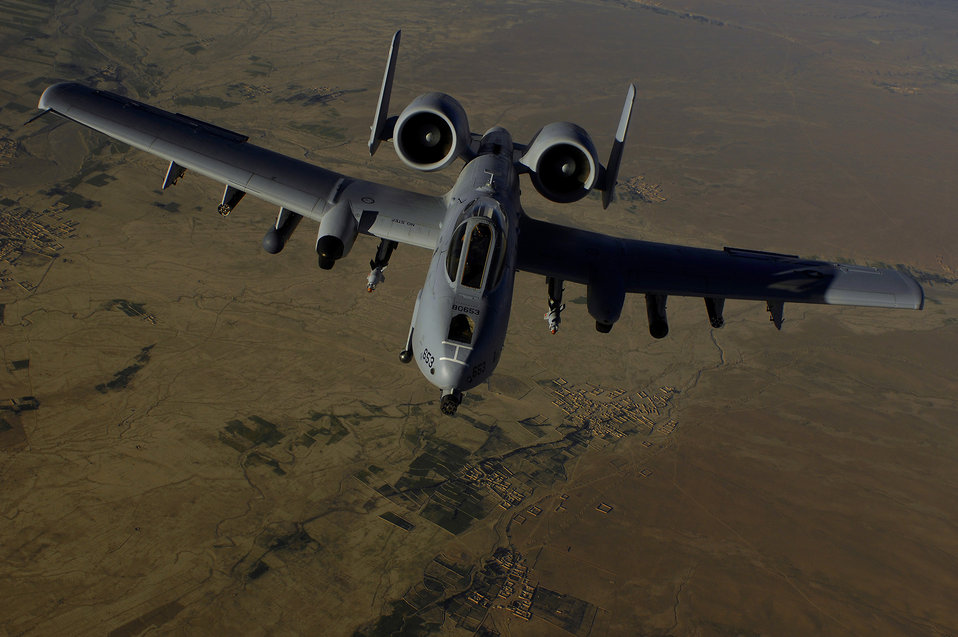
Agility and flexibility: Key components of airpower teamwork

An A-10 Thunderbolt II flies on a May 29 mission over Afghanistan. The A-10 is deployed to support Operation Enduring Freedom.